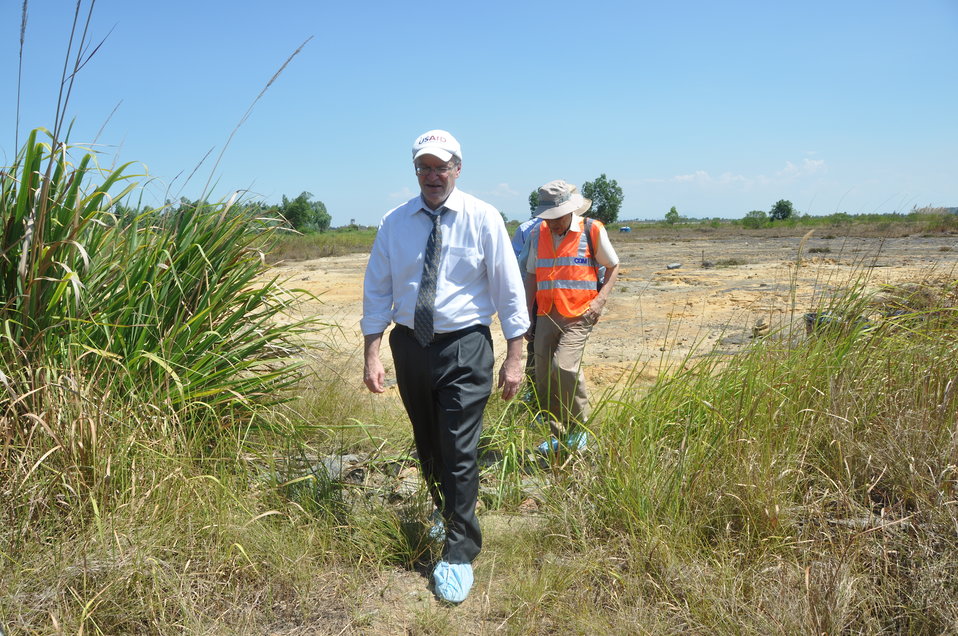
USAID Deputy Administrator Donald Steinberg visits Danang Airport where dioxin remediation project will be conducted